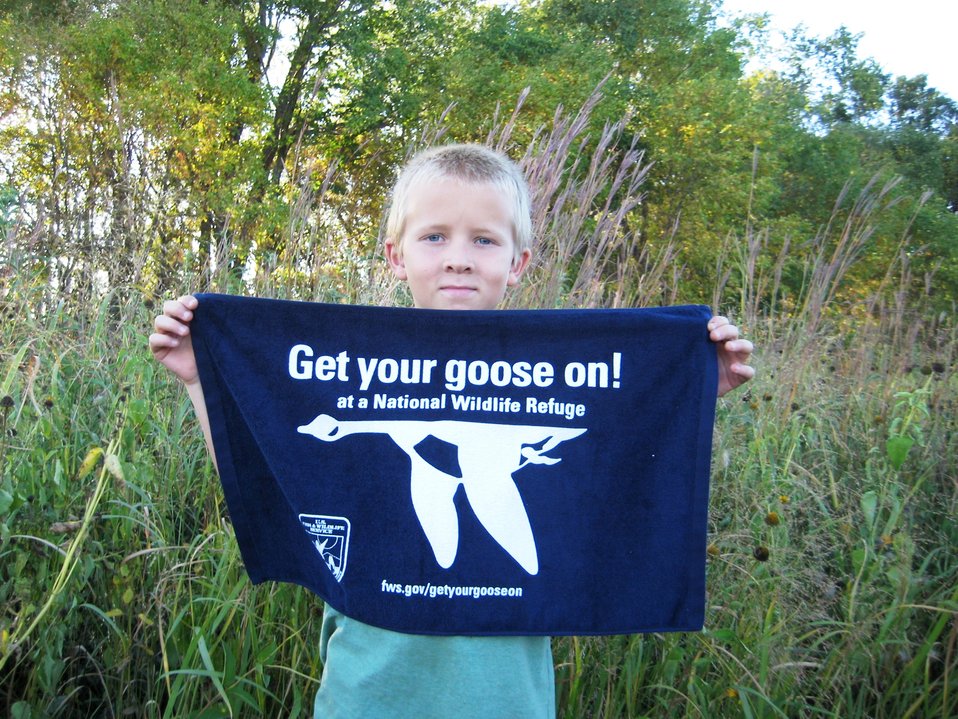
Get Your Goose On!

Taken at Tewaukon National Wildlife Refuge.